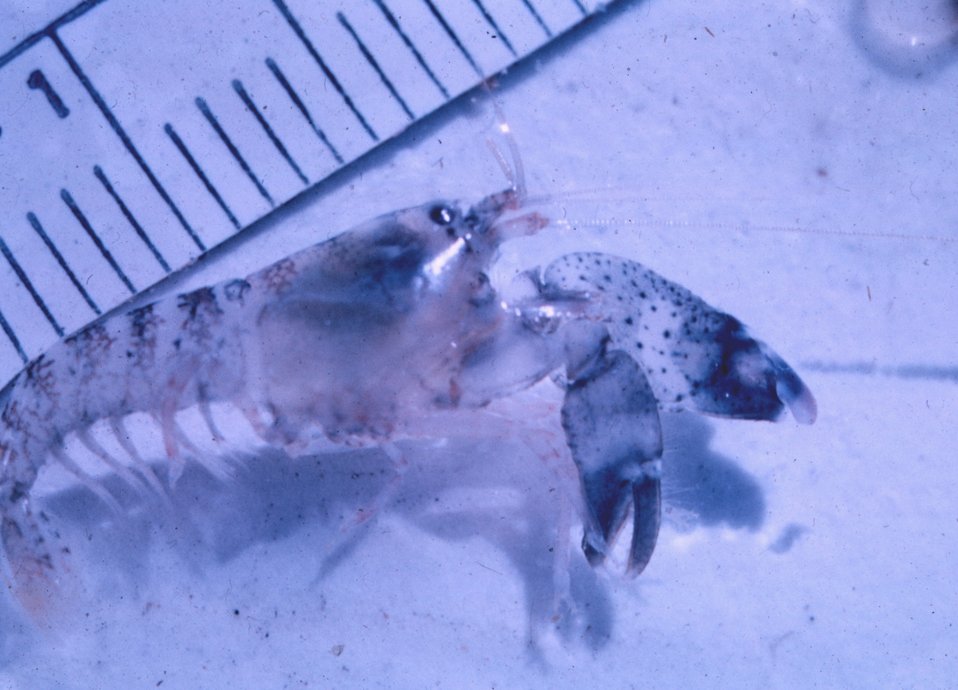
Shrimp